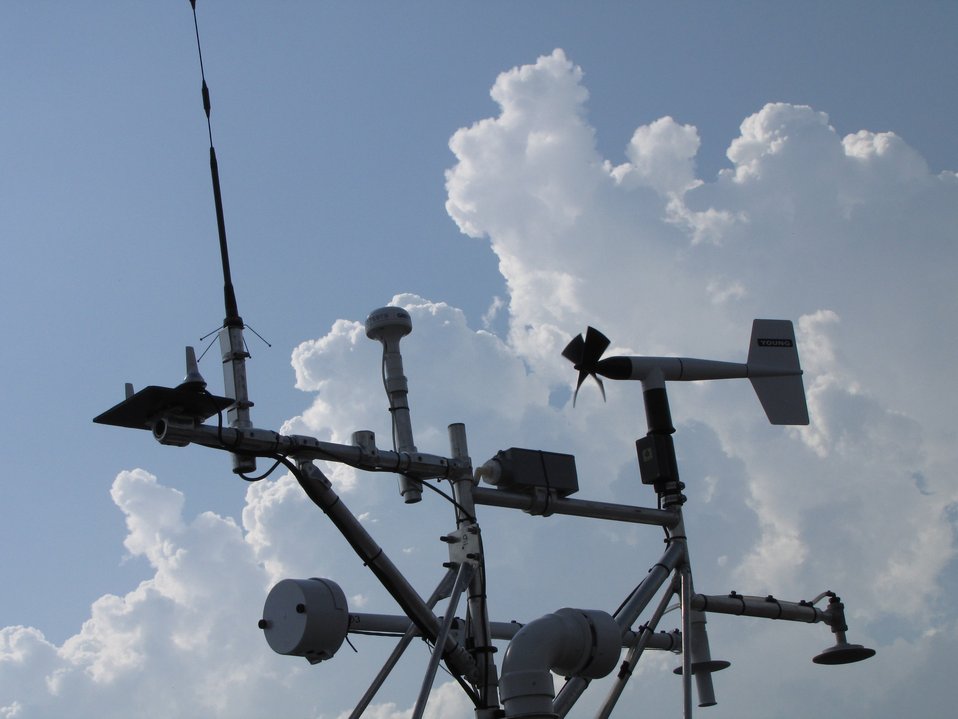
Rack of weather instruments attached to mobile mesonets